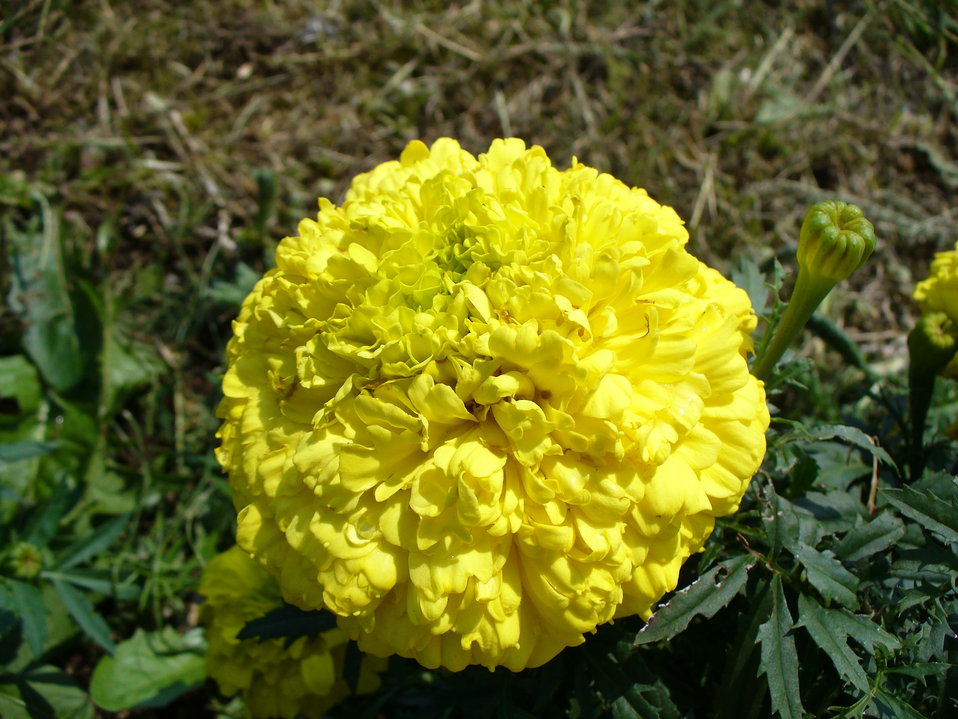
I am the originator of this photo. I hold the copyright. I release it to the public domain. This photo depicts a flower.